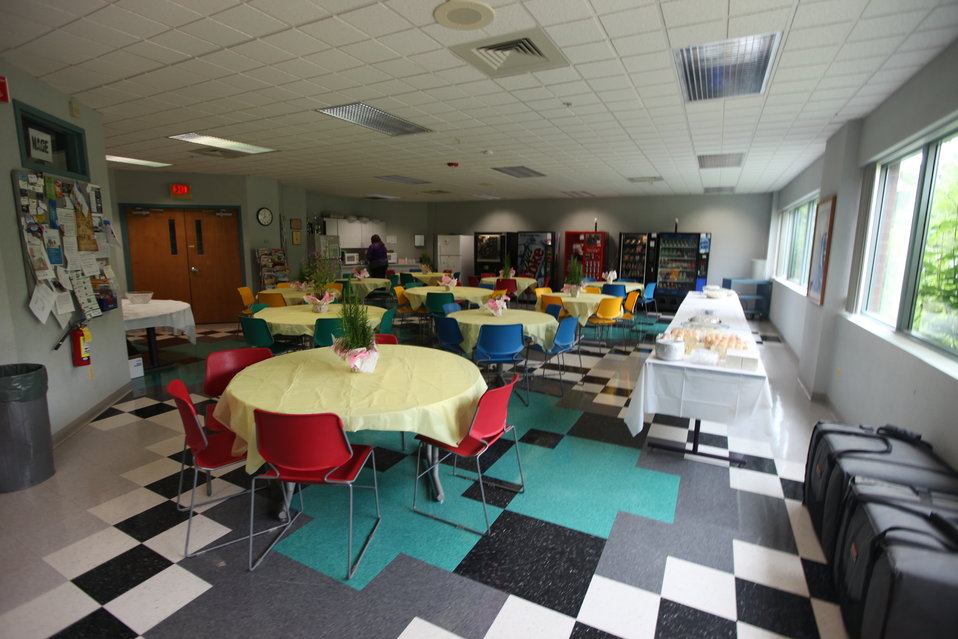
Northeast Region Employee Appreciation Awards

Preparing for a luncheon.